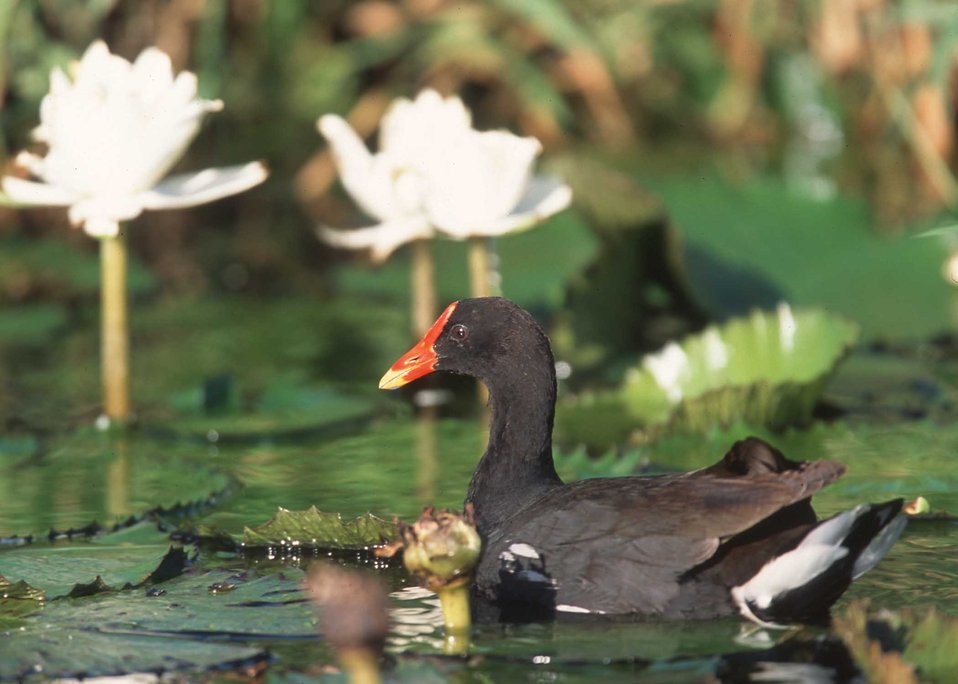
Hawaiin Common Moorhen in Hawaii wetland.